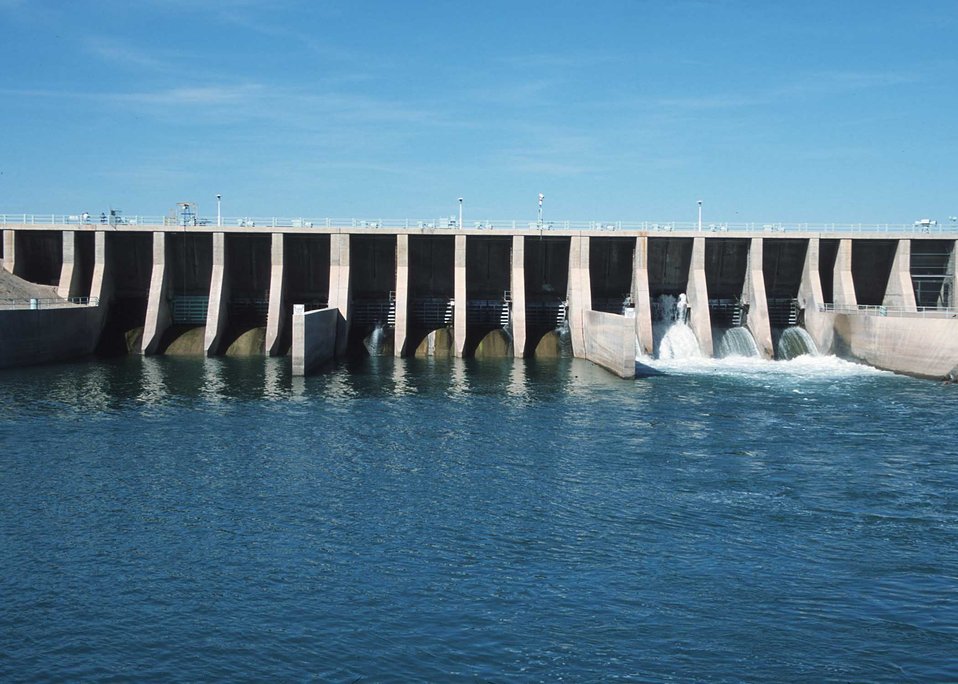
Imperial Dam, Yuma, Az. Salinity is tested here as a component of the Colorado River Basin Salinity Project.